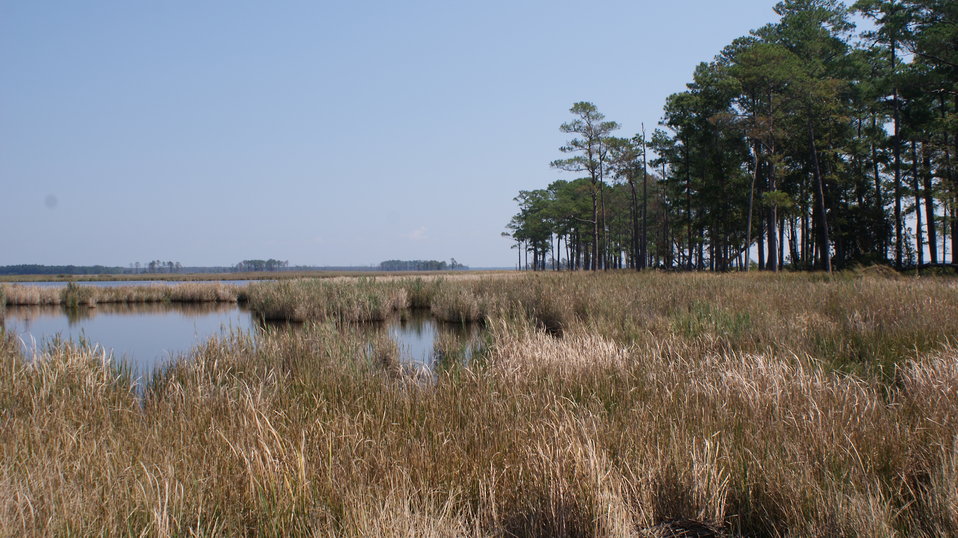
Blackwater National Wildlife Refuge - East Side

Spartina and Three Square in the foreground with Loblolly Pine in the background.